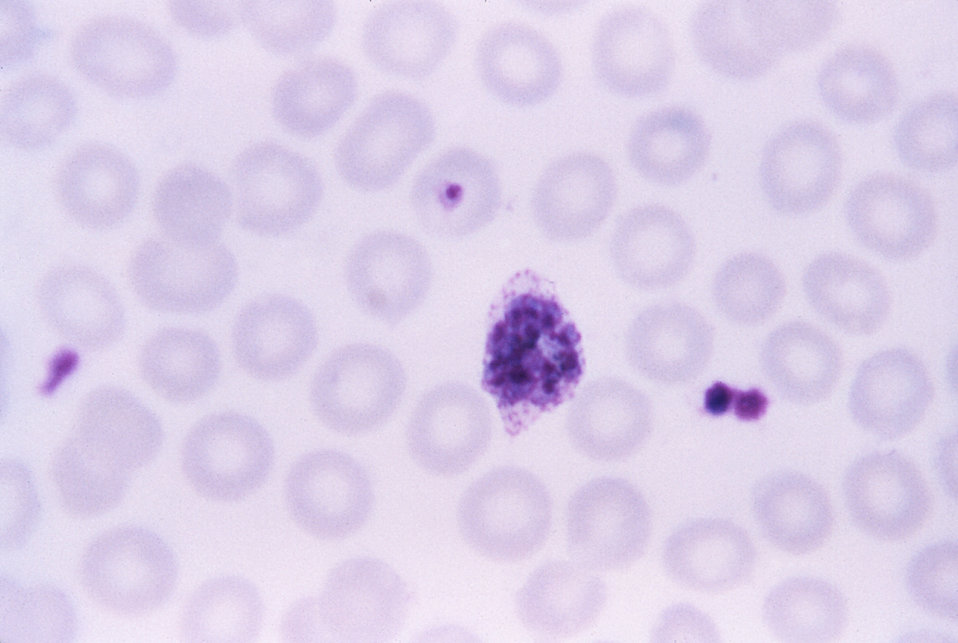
This thin film Giemsa stained micrograph depicts a mature Plasmodium ovale schizont.